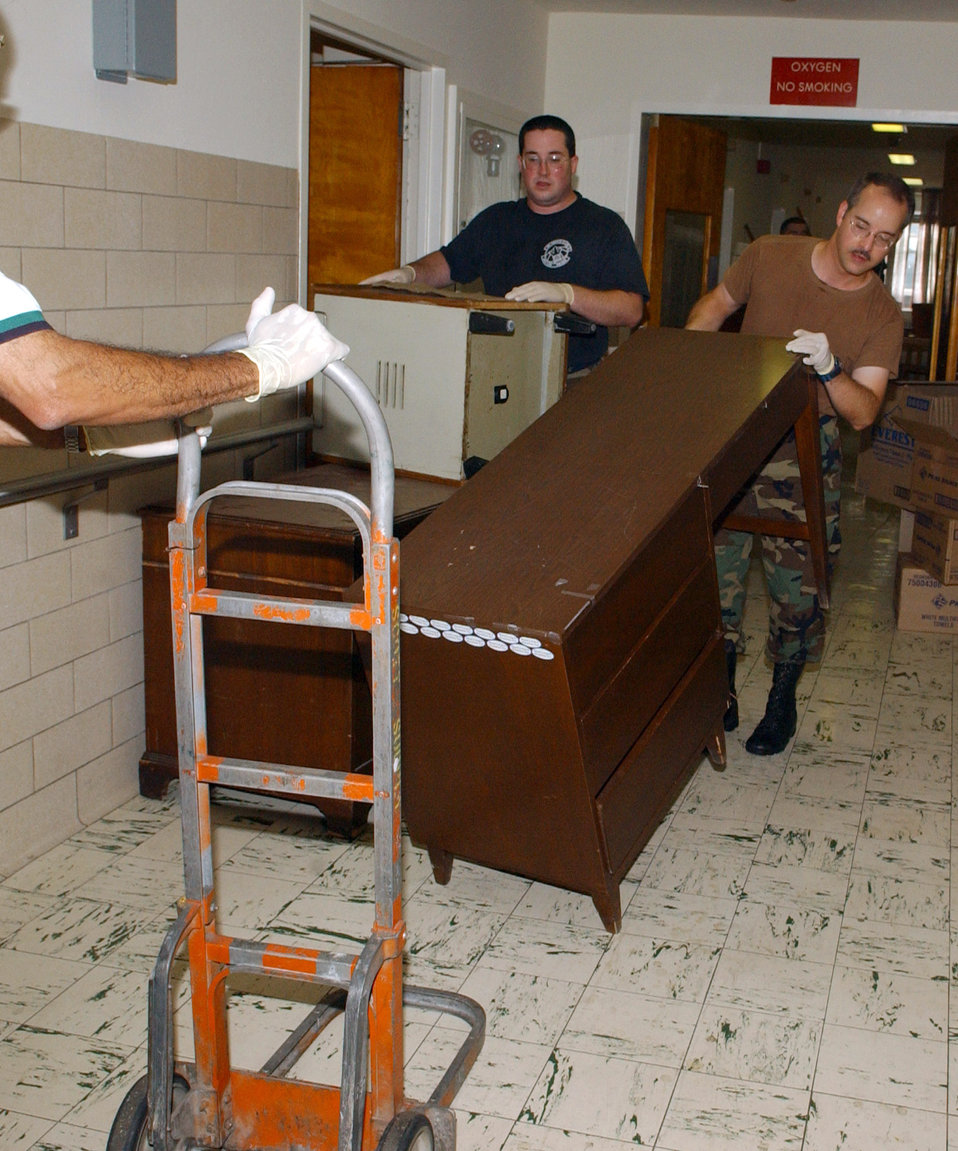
Airmen spruce up living space for retirees displaced by Katrina

WASHINGTON -- Tech. Sgt. Chris Longoria (left) and Master Sgt. Philip Krzywicki move furniture along with more than 100 volunteers from Bolling Air Force Base, D.C., on Aug. 31 to clean and set up 125 rooms at the Armed Forces Retirement Home here in preparation for the arrival of veterans displaced by the effects of Hurricane Katrina. More than 400 veterans from Gulfport, Miss., are being housed at the retirement home until their facility can be repaired, which is estimated to take more than a year. Sergeant Longoria is assigned to the Air Force media services headquarters and Sergeant Krzywicki is part of the U.S. Air Force Band.